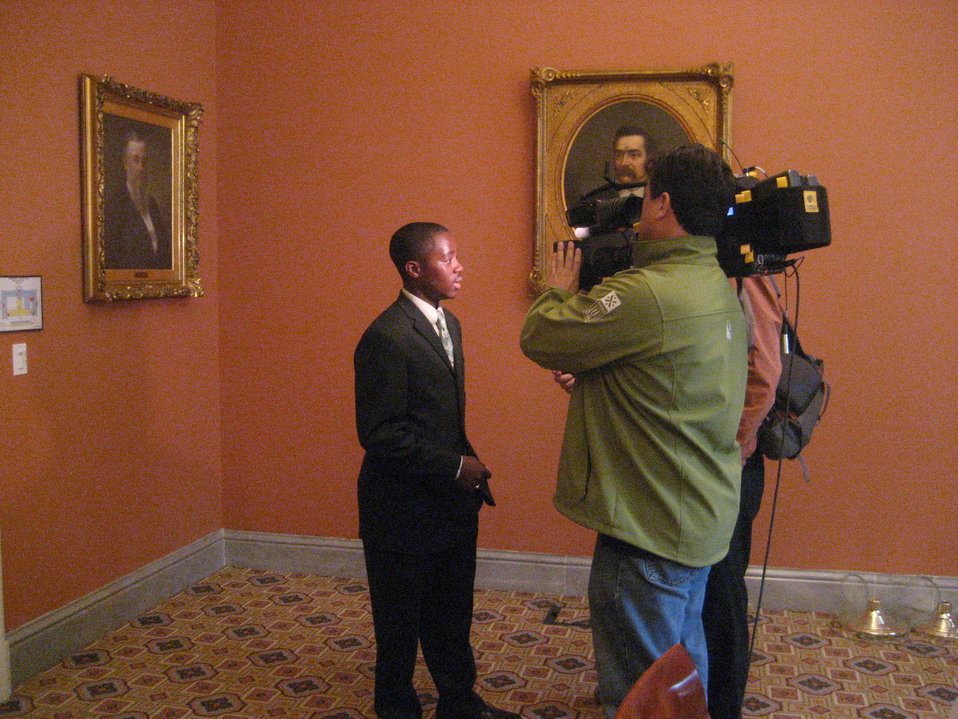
National Financial Capability Challenge, 4/28/10

CNN interviews Aaron Moore, a student at Overlea High School in Baltimore, after the National Financial Capability Challenge recognition event in the Treasury Cash Room.